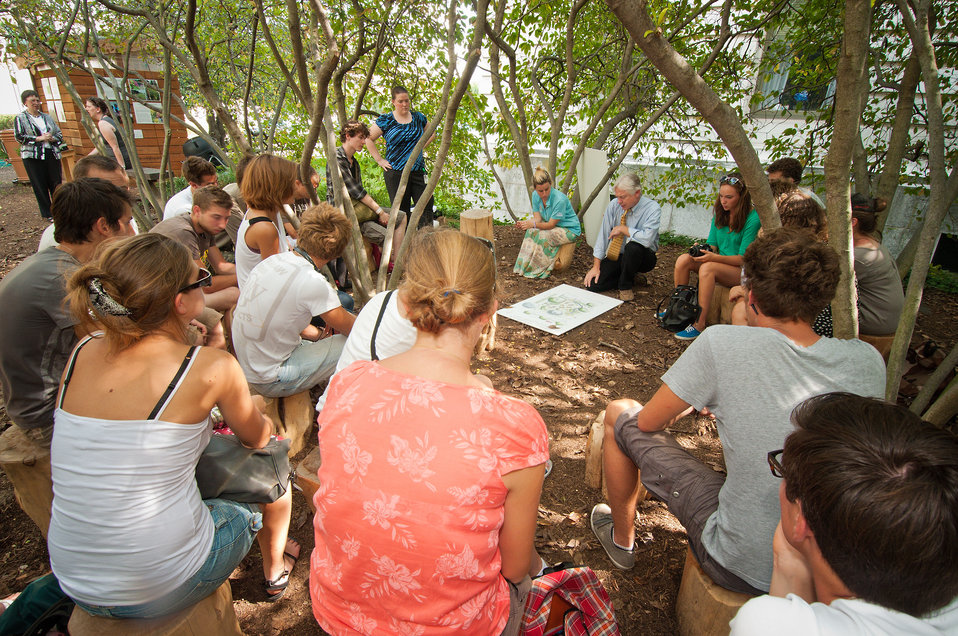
Left to right, USDA Director, People’s Garden Initiative, Julie Grogan-Brown (standing, blue shirt), USDA People’s Garden, Outreach and Education Coordinator Annie Ceccarini (seated), and USDA National Landscape Architect, Natural Resources Conservation Service Bob Snieckus (kneeling), explain the construction of the United States Department of Agriculture People’s Garden to French students from Ecole Du Breuil, School of Horticulture and Landscaping Techniques, Paris, France. The students visited the United States Department of Agriculture People’s Garden in Washington, D.C., on Tuesday, September 4, 2012. The class was lead by Professor Hervé Dardillat, Landscape Architect, and Professor Claude Bilgoraj, English Instructor. The students are on a two-week U.S. tour, which includes a visit to the White House Kitchen garden, as well as gardens and parks in Washington, D.C. The students will also visit Temple University in Philadelphia, PA., in addition to parks and gardens in New York City where they will also stay with host families and work on community gardens.